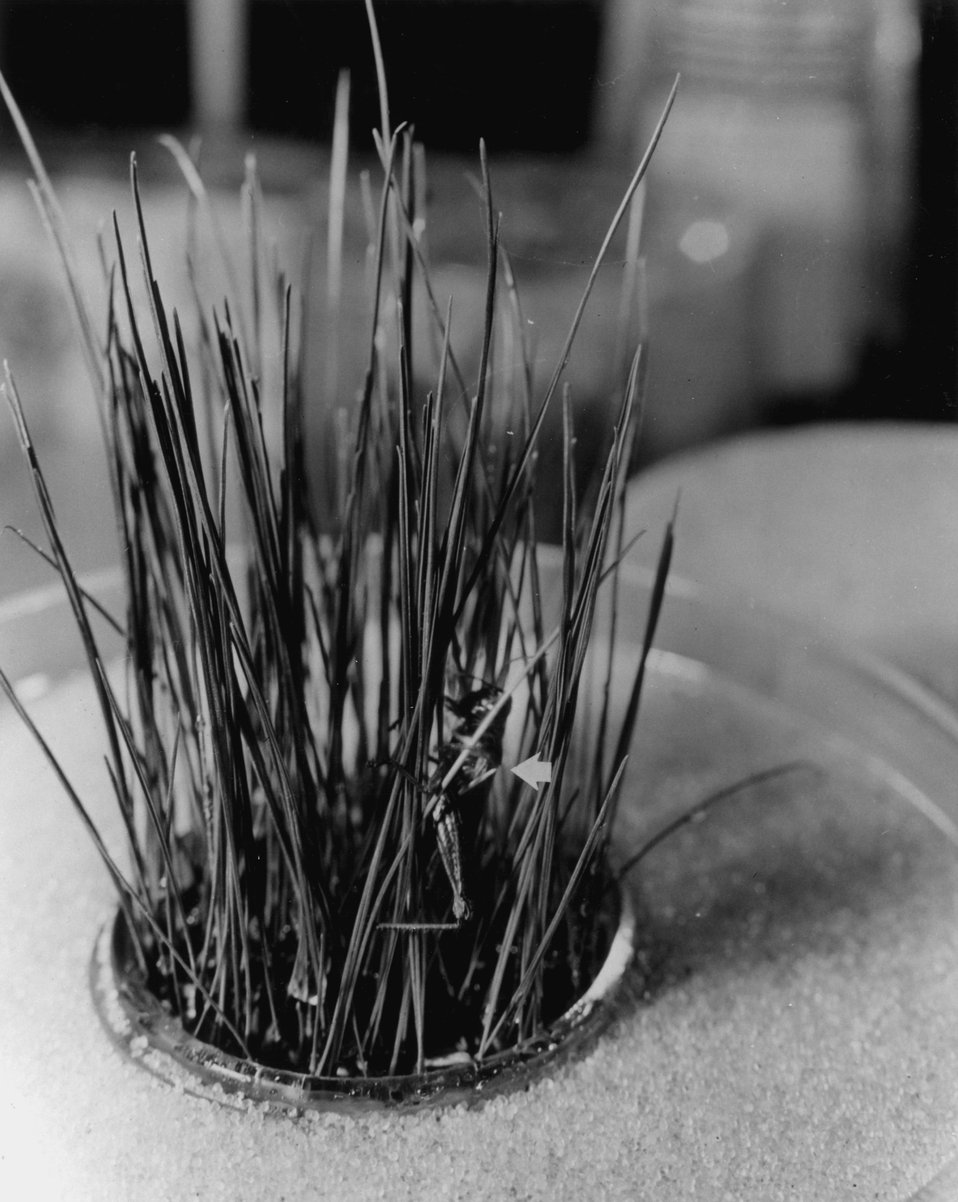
CESIUM-137 TRANSFER IN MICROCOSM...Photo shows a simplified substrate-producer-consumer model of a grassland at Oak Ridge National Laboratory which is composed of soil tagged with cesium-137, Rescue grass which absorbs the radioisotope from soil, and grasshoppers (arrow) which ingest the cesium-137 when feeding. c. 1971